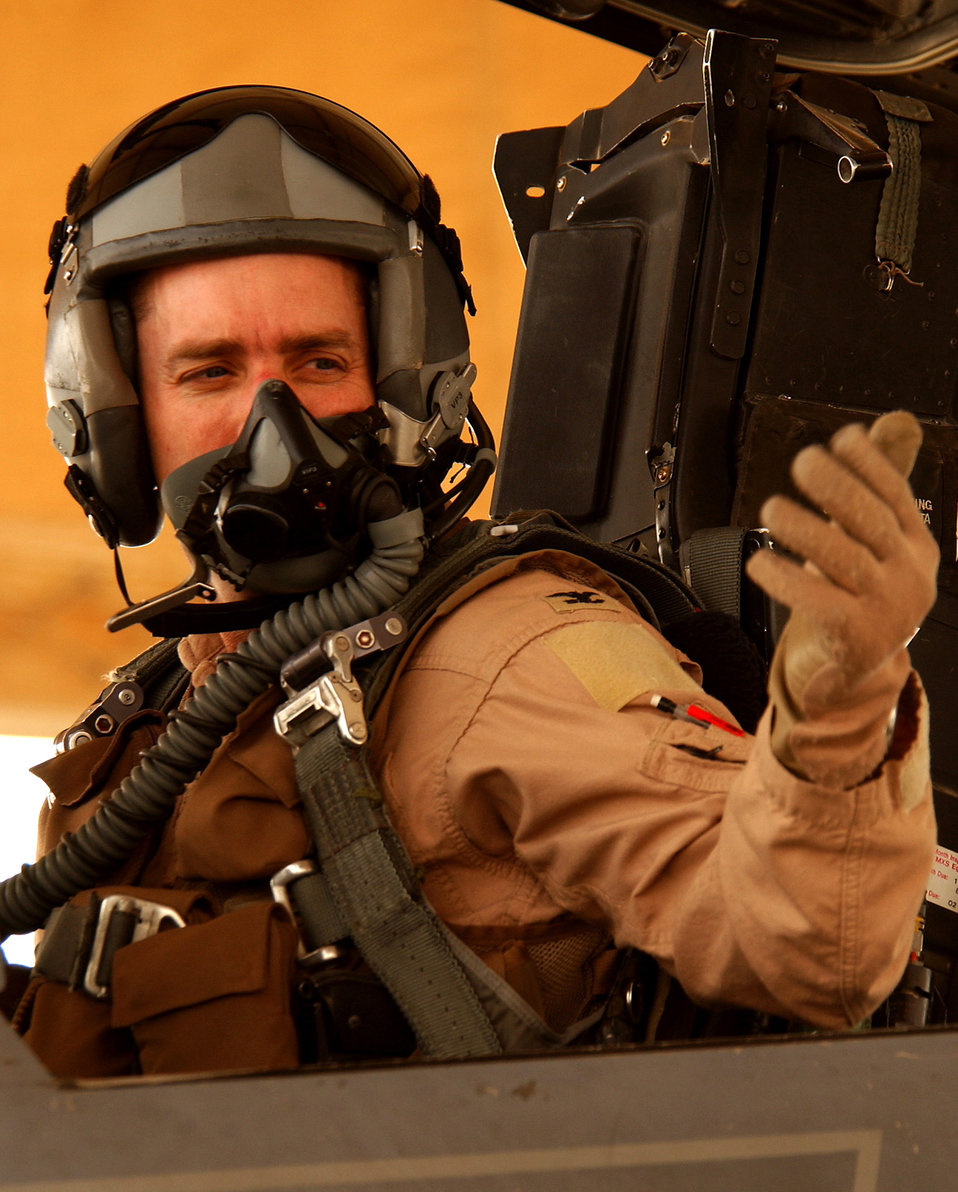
OPERATION IRAQI FREEDOM -- Col. Brett Williams prepares his F-15C Eagle for an Operation Iraqi Freedom mission. Williams is assigned to the 363rd Expeditionary Fighter Squadron.